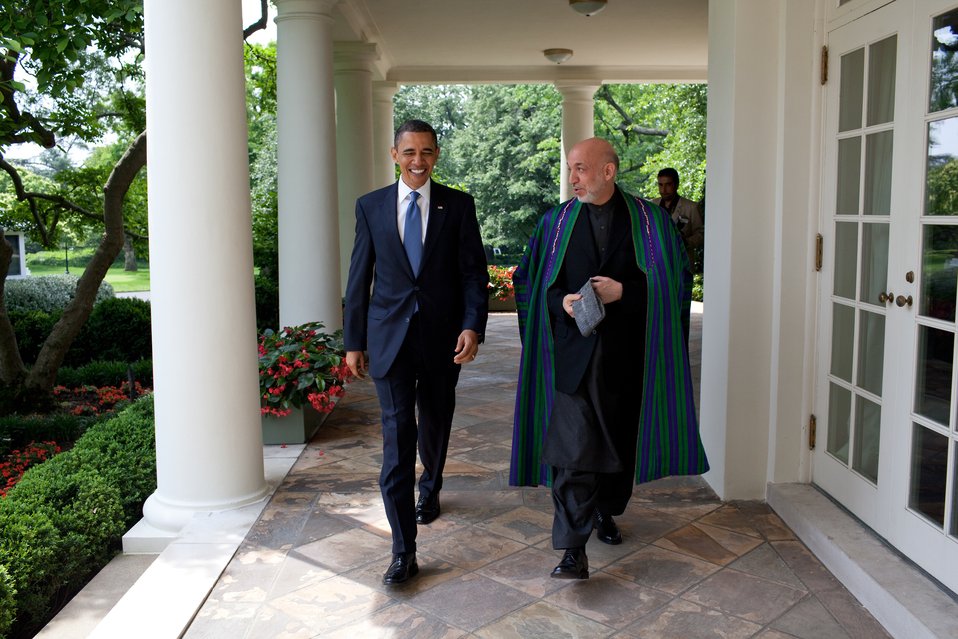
President Obama and Afghan President Karzai Walk Along the Colonnade

President Barack Obama walks with President Hamid Karzai of Afghanistan along the Colonnade of the White House, en route to a joint press conference in Washington, D.C., May 12, 2010.